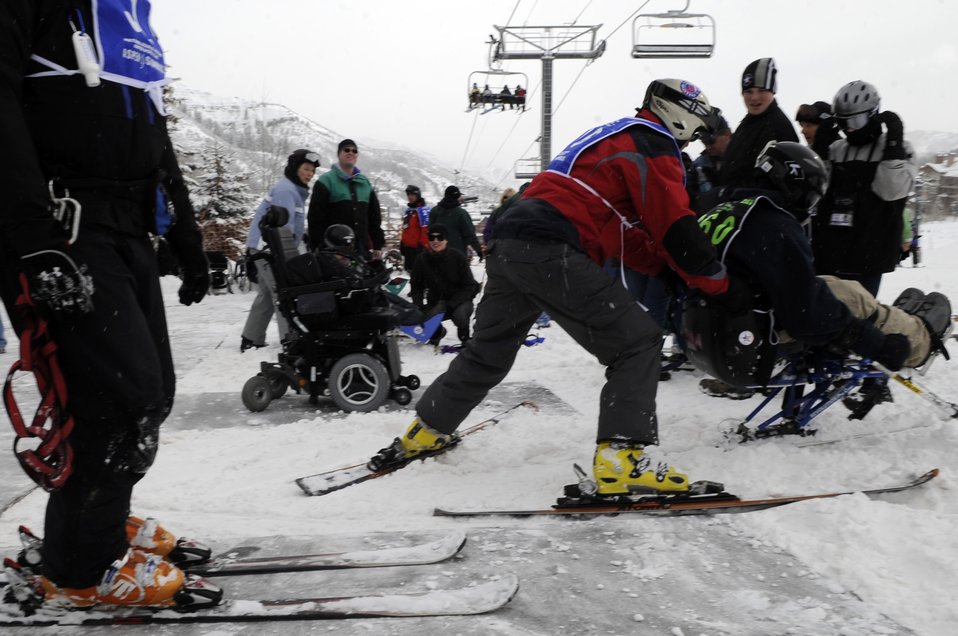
Winter rehabilitation clinic shows veterans potential

Senior Airman Shawn O'Neil mono-skis with the help of an instructor during the 23rd National Disabled Veterans Winter Sports Clinic held March 30 at the Snowmass Village, Colo. The annual disabled learn-to-ski clinic helps motivate and rehabilitate disabled Department of Defense veterans. Desiree N. Palacios)